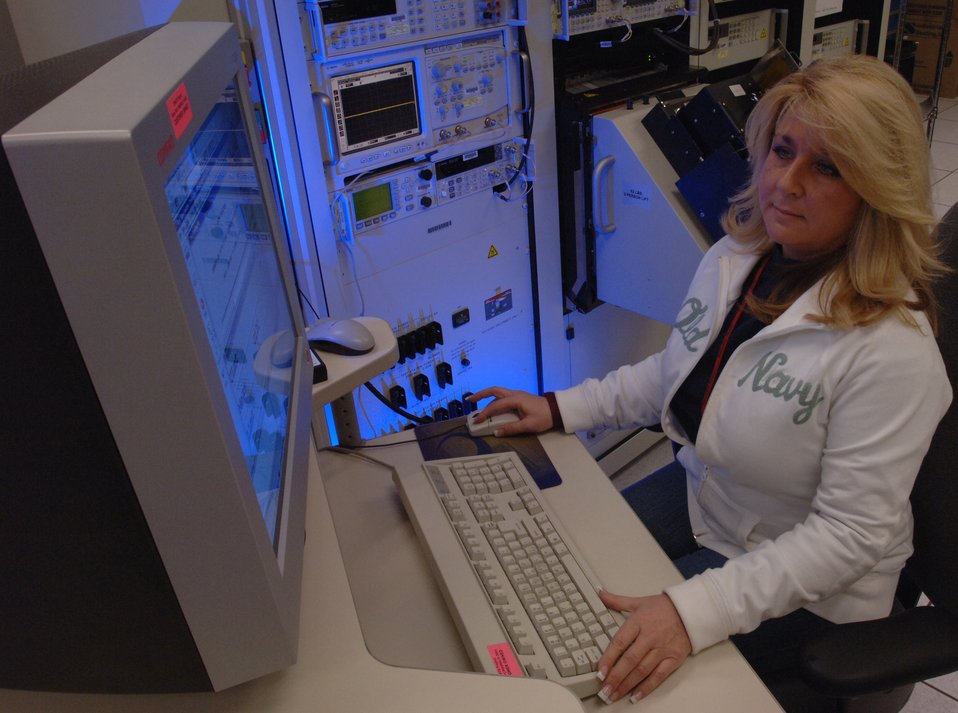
Hill supports warfighters with software products

Tracie Rivera works on the Ground Minuteman Automatic Test System program Feb. 16 at Hill Air Force Base, Utah. She is a software engineer with the 520th Software Maintenance Squadron.